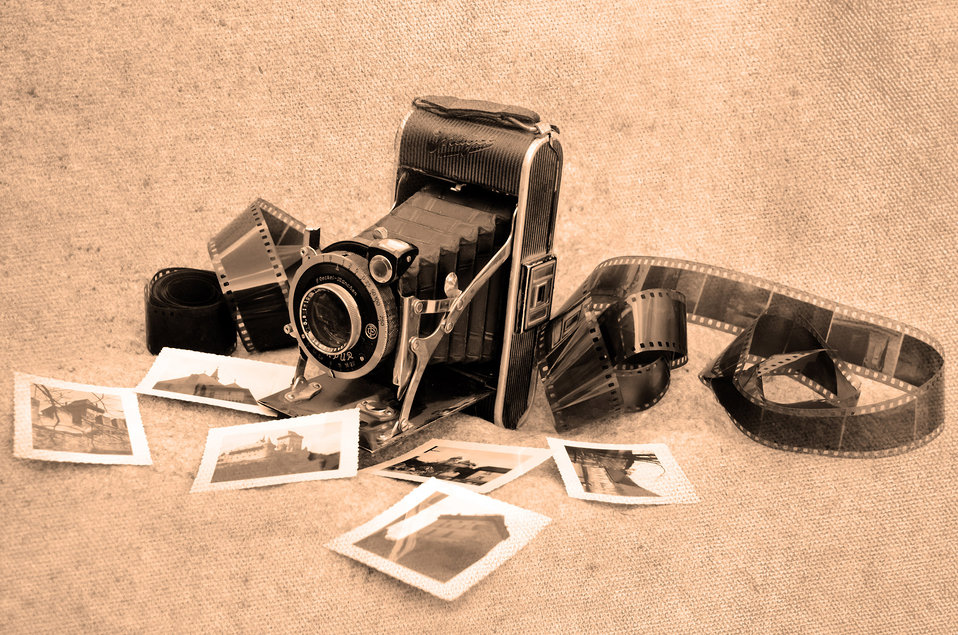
Old camera - wallpaper.